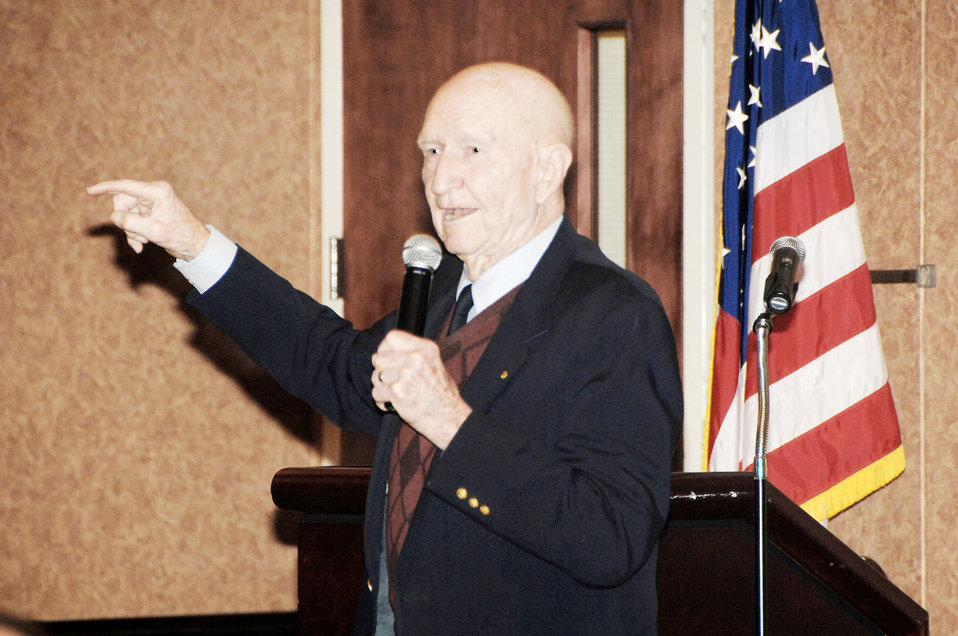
Berlin Airlift Exhibition to reside at Travis Air Museum

Retired Col. Gail Halvorsen speaks to a group of Airmen during the Airlift Tanker Association luncheon at Travis Air Force Base, Calif., Dec. 10, 2009. Colonel Halverson is known as the